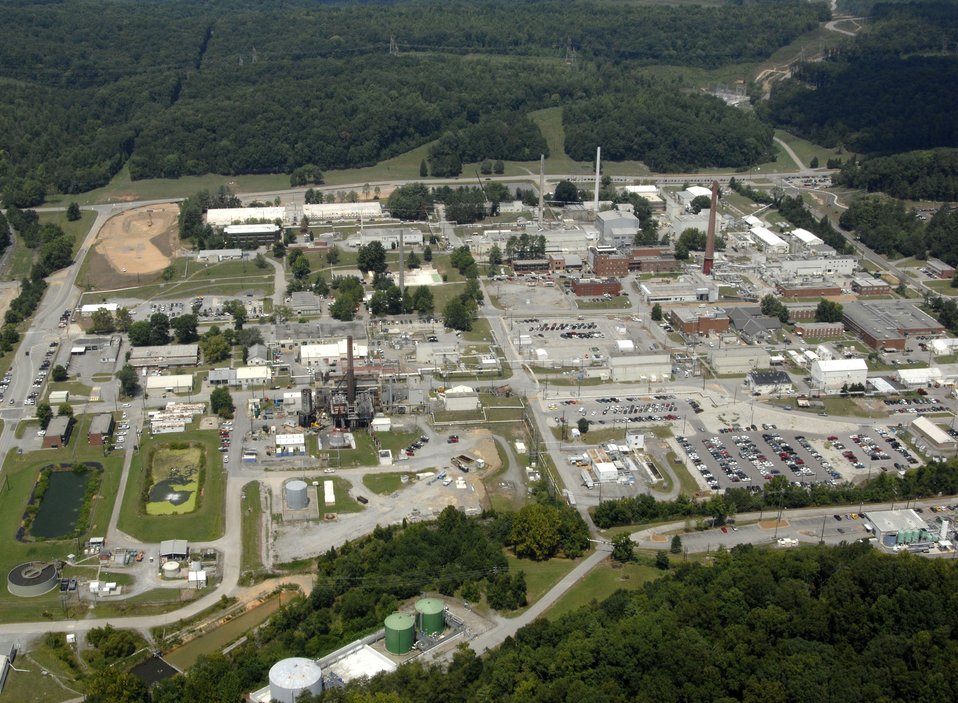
ORNL Central Campus

In contrast to the modern east and west campuses, ORNL’s central campus is crowded with old, hazardous, or excess facilities.